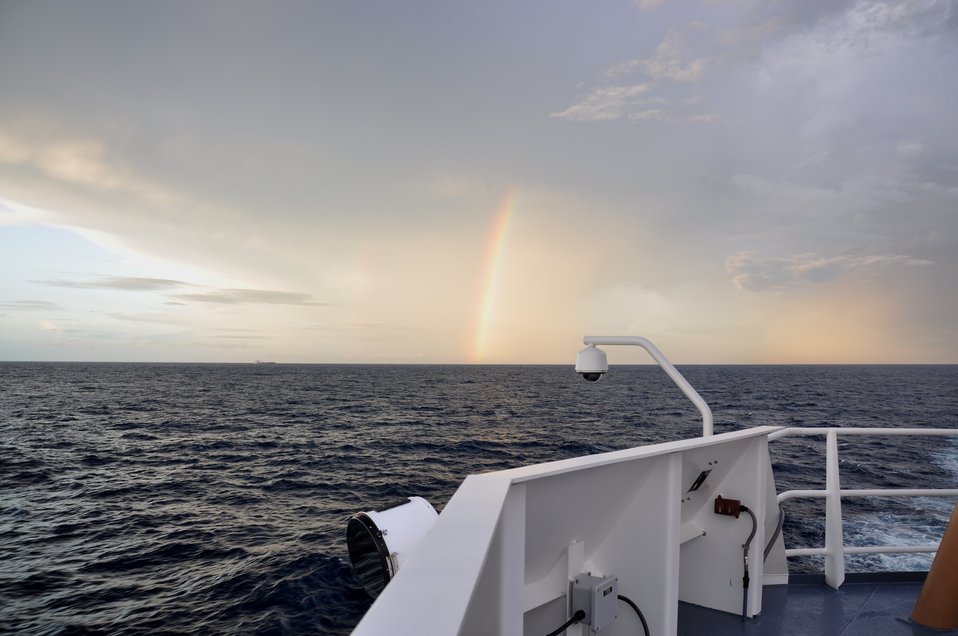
Rainbow at sunset with a small cargo ship in the distance.